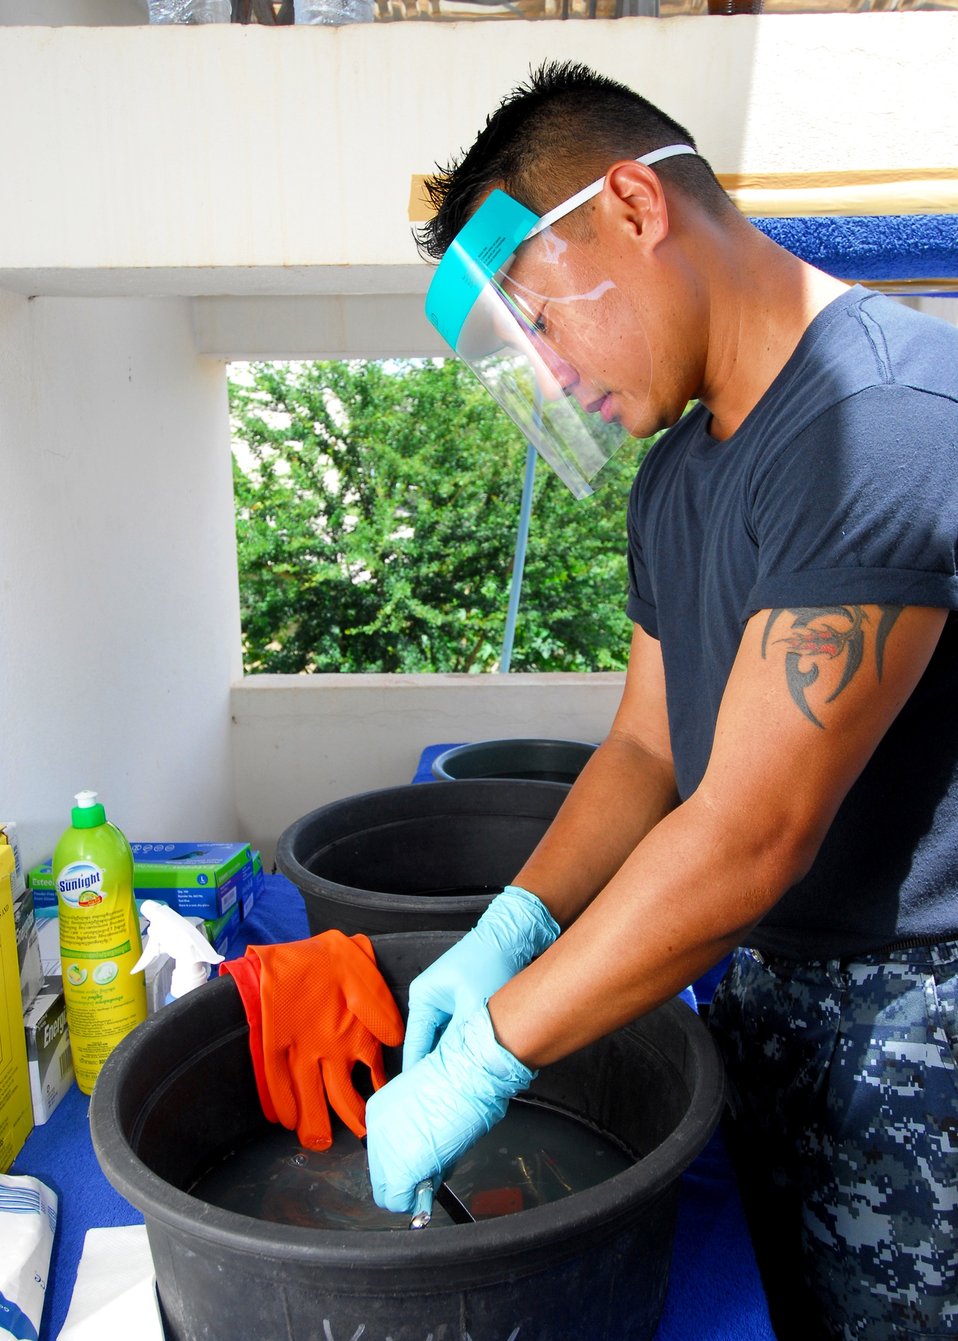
U.S. Hospital Corpsman 2nd Class Jem Arinduque cleans dental utensils during a dental community service event at Veal Ang Popel Clinic, in support of Pacific Partnership 2010, while the Military Sealift Command hospital ship USNS Mercy (T-AH 19) is in Kampong Spue, Cambodia, on June 25, 2010.